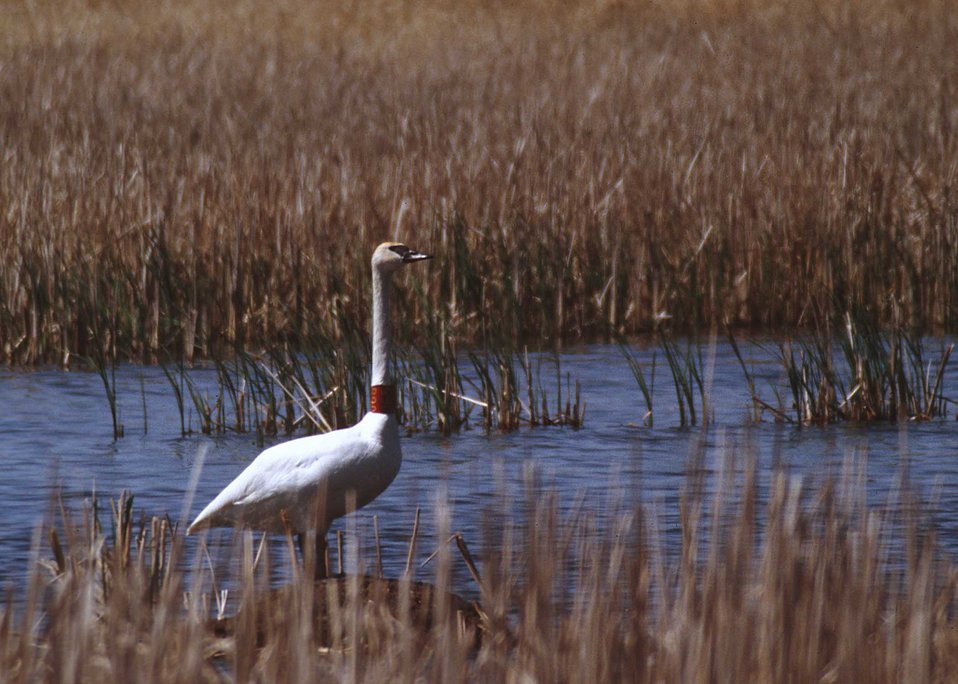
Trumpeter swan in a pothole wetland in South Dakota.